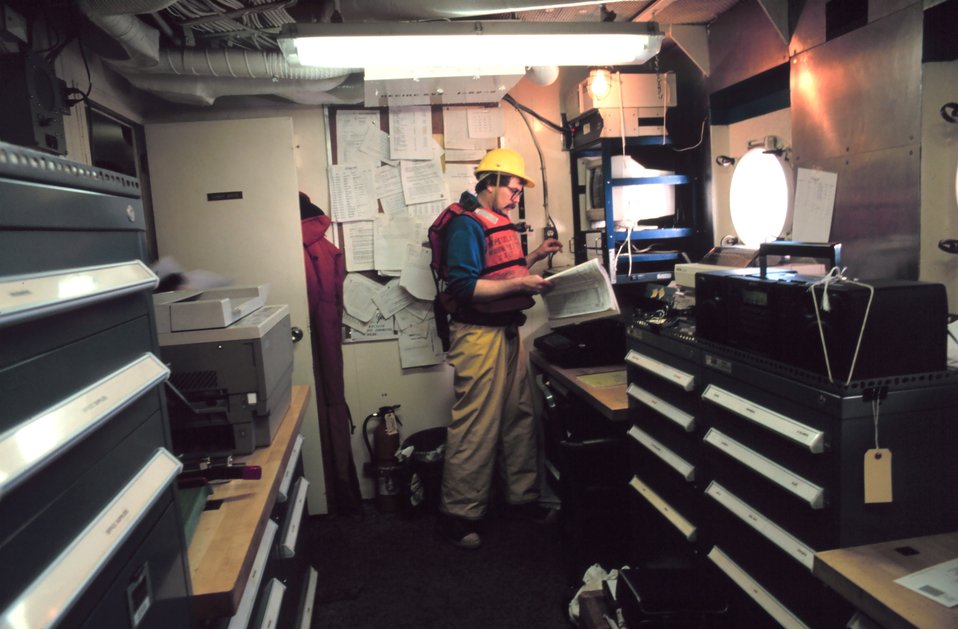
Fisheries lab space on the MILLER FREEMAN